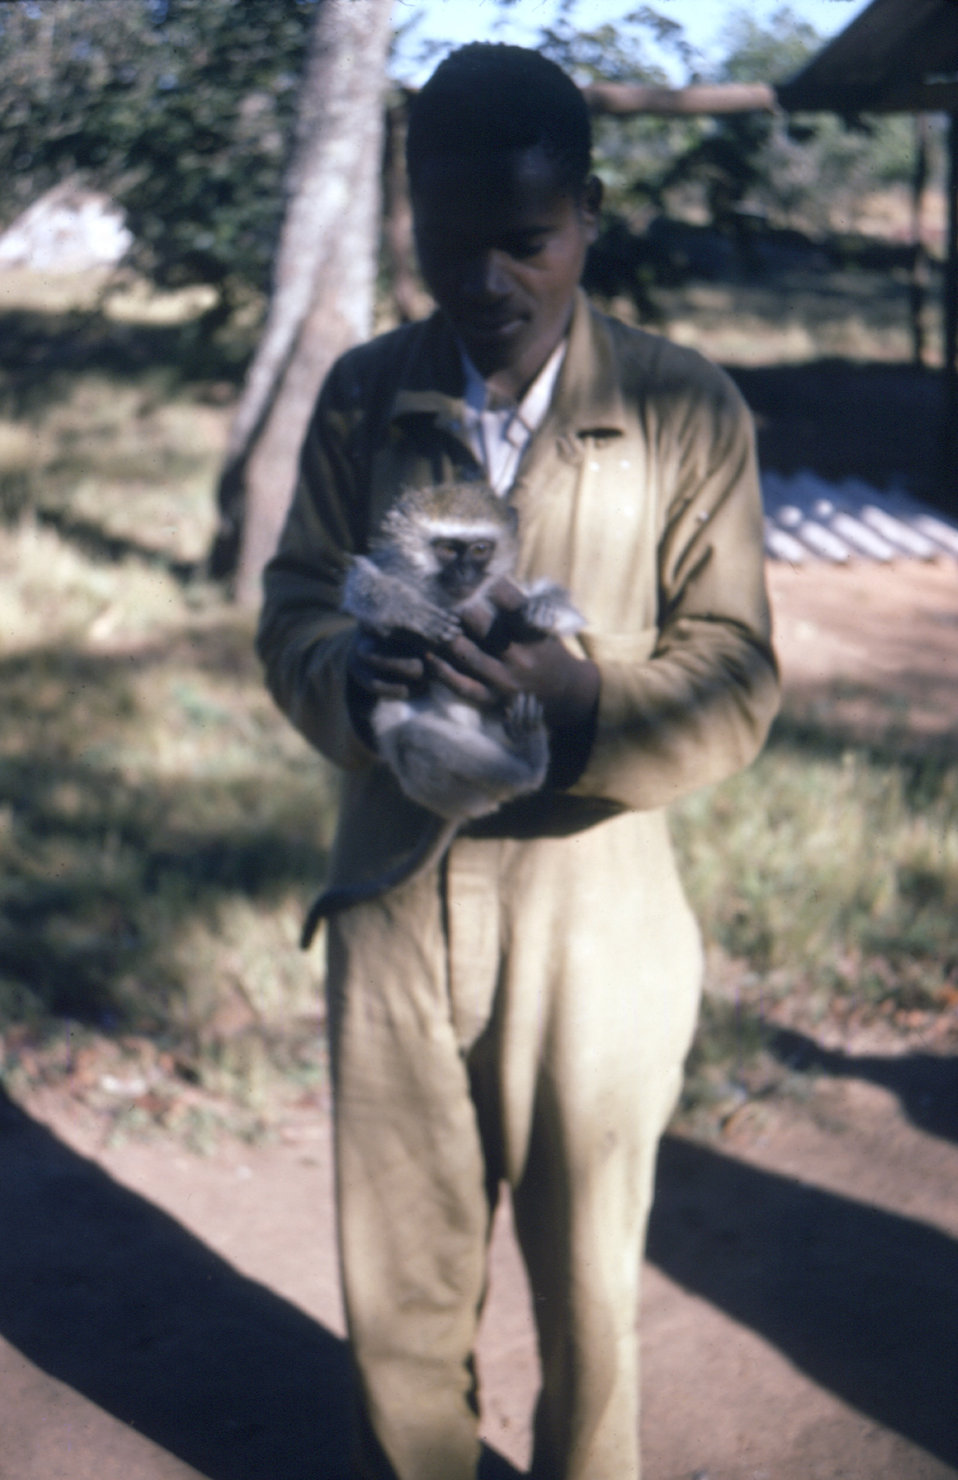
This photograph showed an individual who was holding a green monkey, Cercopithecus aethiops, during a 1975 Marburg investigation in Rhodesia (now Zimbabwe).